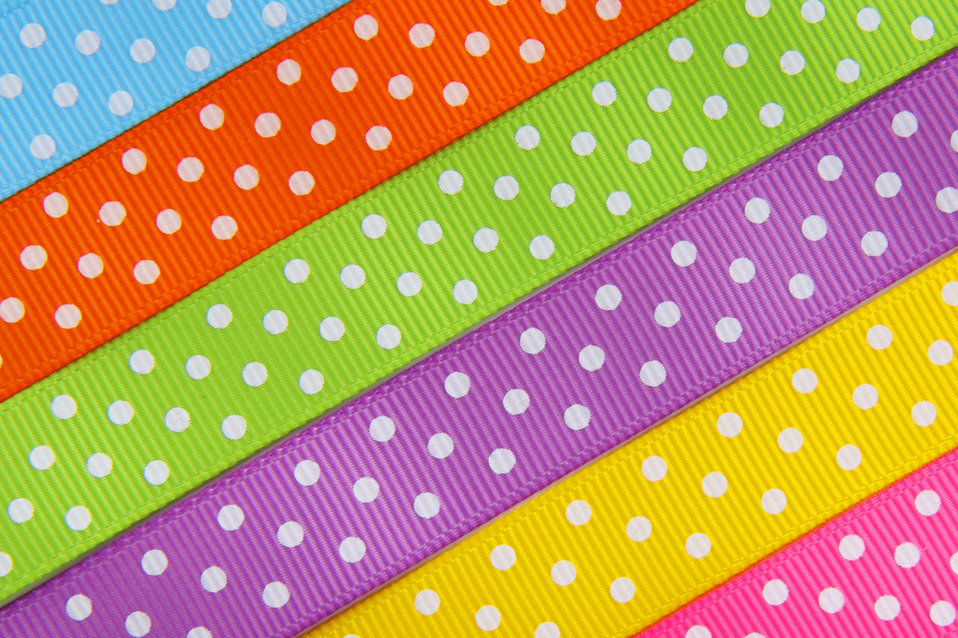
Colorful easter ribbon background.